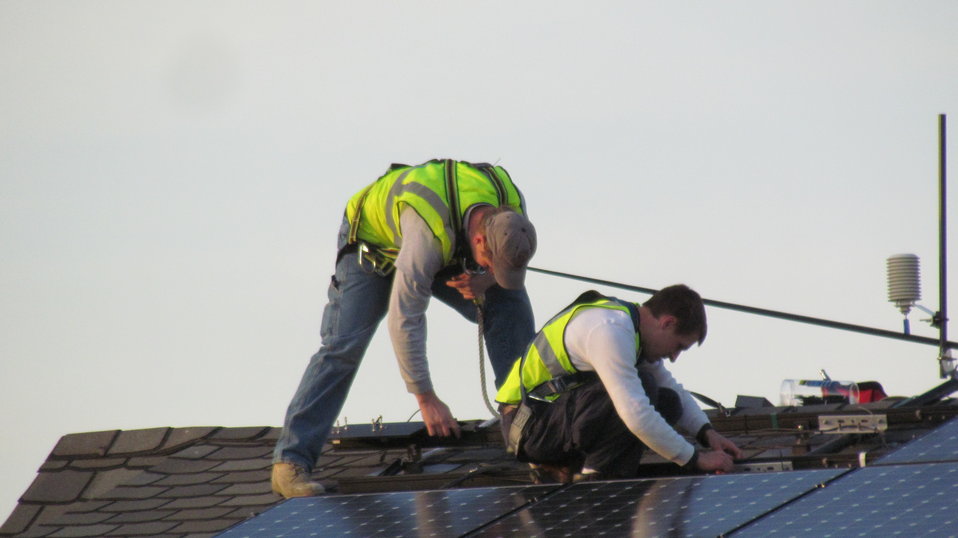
Installation of photovoltaic system instrumentation on roof of NZERTF.